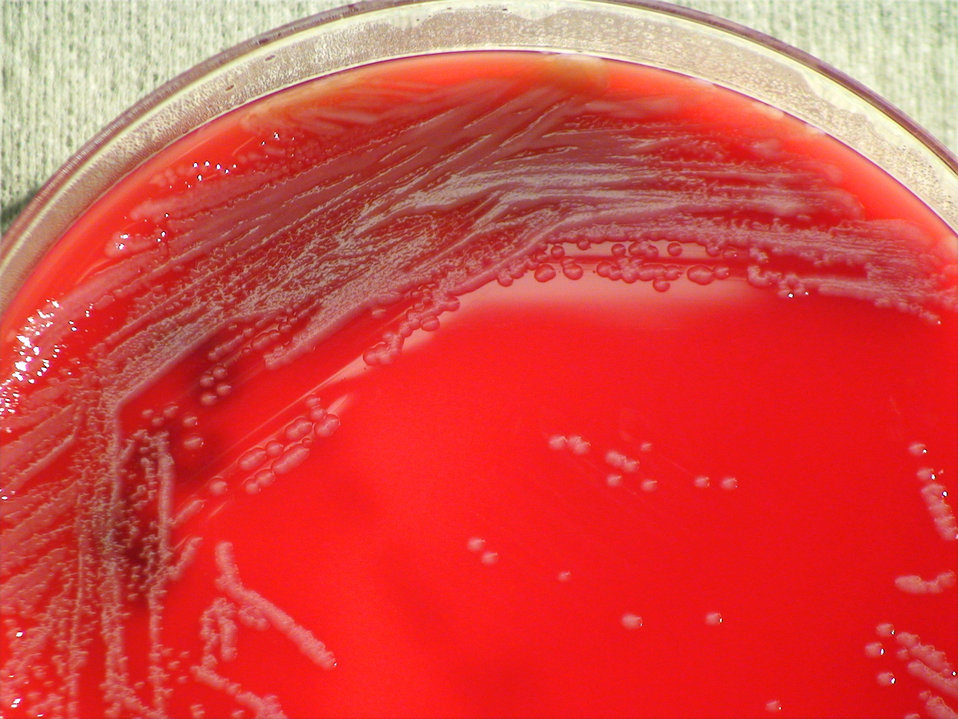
A closer version of PHIL 12485, this photograph depicts a the colonial morphology displayed by Gram-positive Bacillus simplex bacteria, which was grown on a medium of sheep's blood agar (SBA), for a 24 hour time period, at a temperature of 37�C.